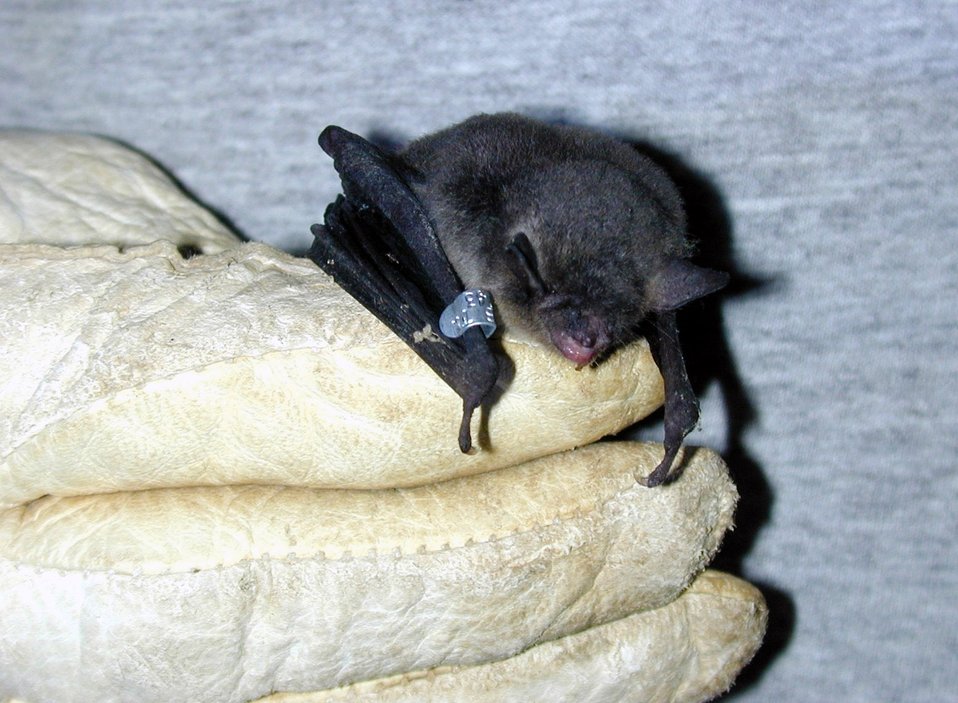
Arnold AFB brings home DOD environmental award

Environmental scientists from Arnold Air Force Base, Tenn., organized, wrote the charter and chaired the Tennessee Bat Working Group to protect a federally listed endangered bat species, the Gray bat. Their work with the Gray bat was a key factor in winning the 2006 Secretary of Defense Gen. Thomas D. White Environmental Award for Natural Resources Conservation.